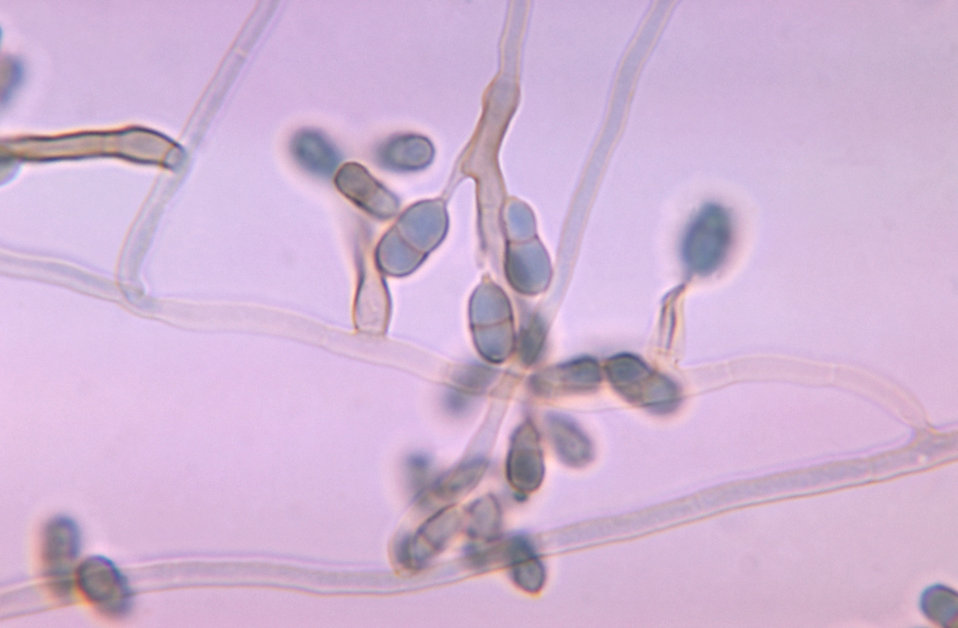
This photomicrograph shows a condiophore with conidia of the fungus Exophiala salmonis.